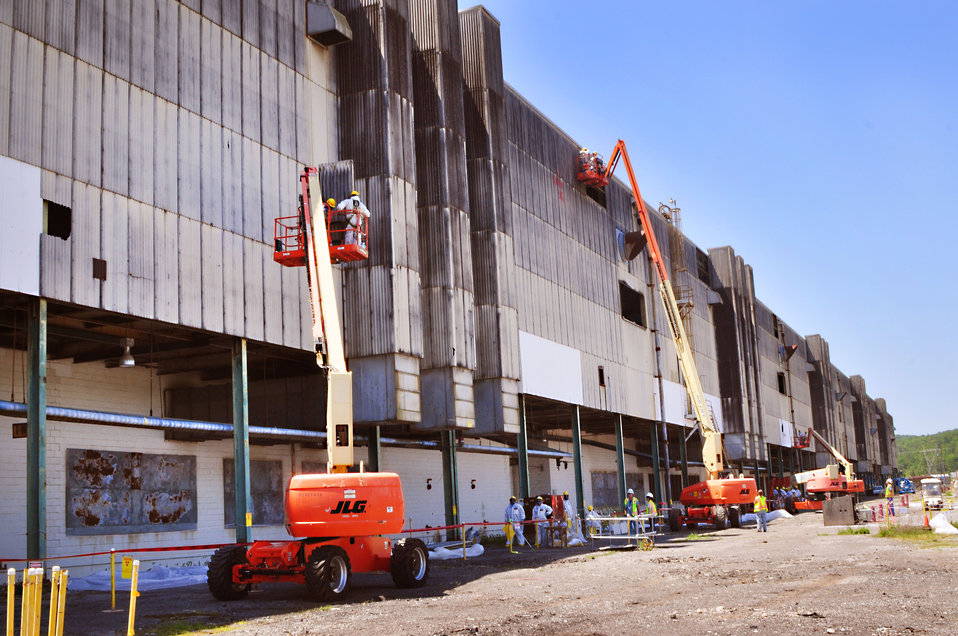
Transite Panels Removal from K-31 Building 2014 Oak Ridge

14-057 DOE photo Lynn Freeny 5-6-2014 ETTP K-31 Oak Ridge Tennessee